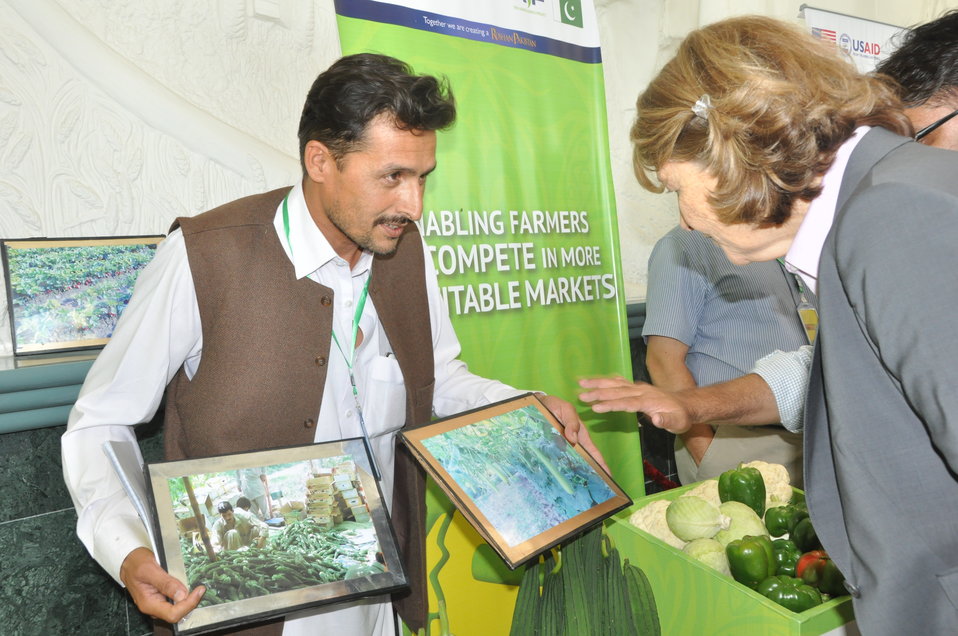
Pakistan Vegetable Fair 2014 (organized by USAID’s Agribusiness Project)

Acting Mission Director for USAID, Pakistan, Nancy Estes while talking to the Farmers.